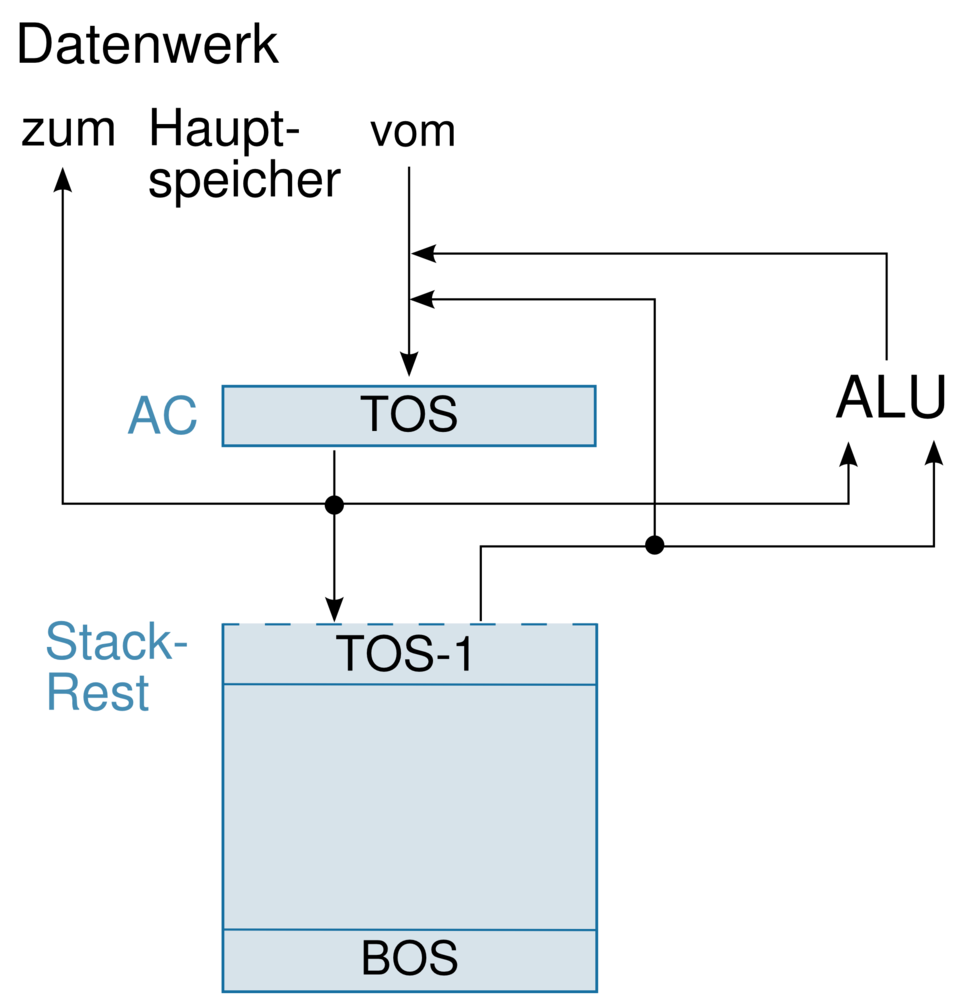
Deutsch: Datenwerk eines 0-Adressrechners